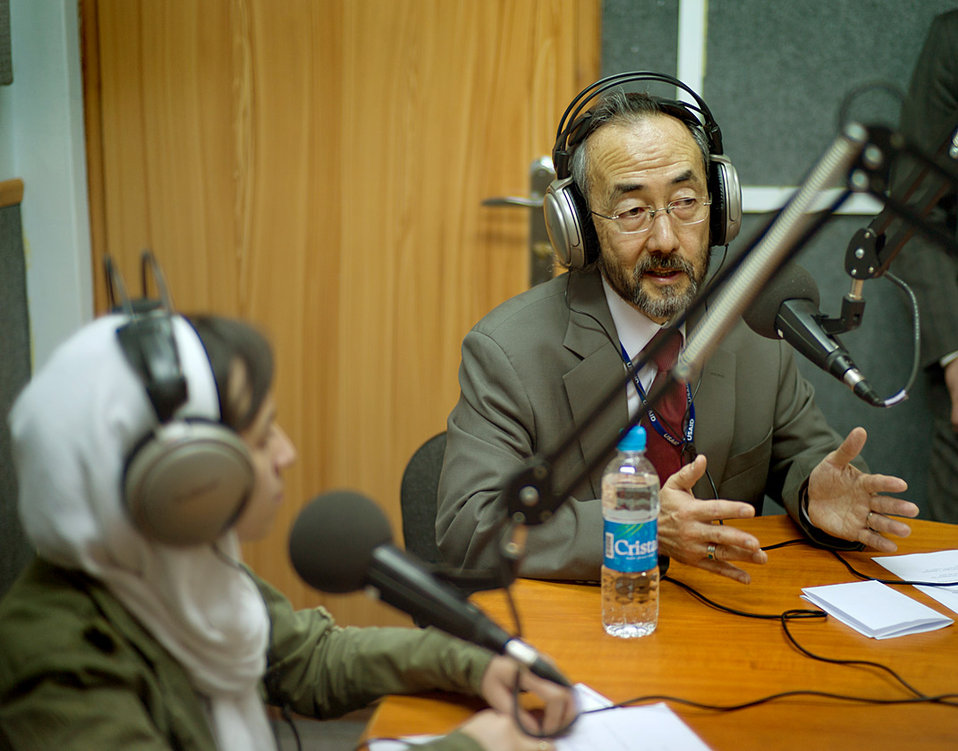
Ken Yamashita and Zarlasht Joya